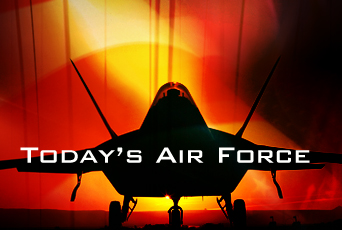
'Today's Air Force' features Midwest flooding